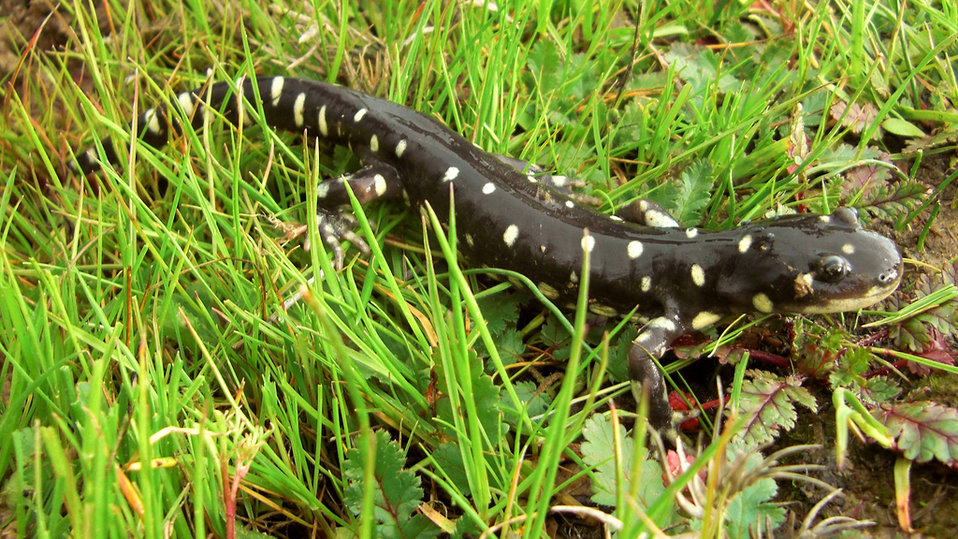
Photo of the Week: California Tiger Salamander in the Grass

This photo was taken by John Cleckler, USFWS, at Jepson Prairie, California. The photo originally was published on the USFWS Southwest Region Flickr Page:
www.flickr.com/photos/usfws pacificsw